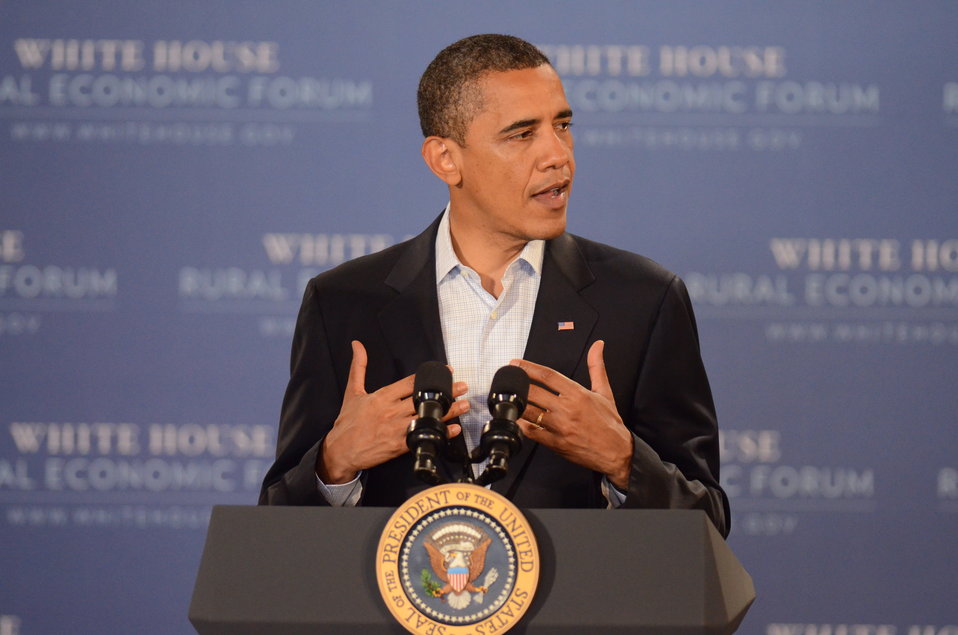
President Barack Obama speaking at the Northeast Iowa Community College, for a White House Rural Economic Forum on Tuesday, Aug. 16, 2011. The President’s visit focused on agriculture’s contribution to the national economy, and how to create more jobs in rural America.